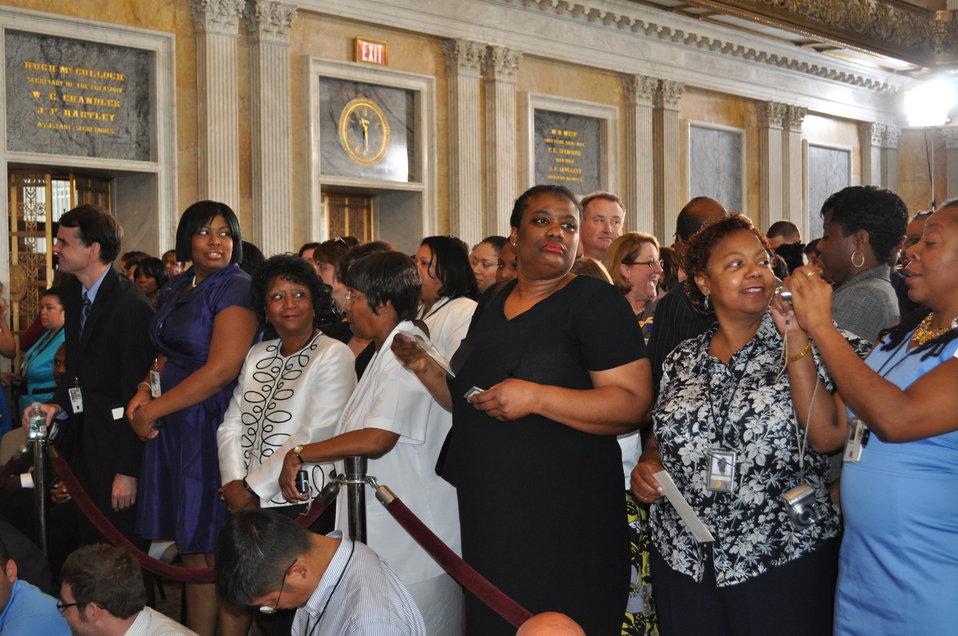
Michelle Obama visits the Treasury Department, 7/7/10

Treasury employees gathered in the Treasury Department’s Cash Room to hear remarks by Secretary Geithner and First Lady Michelle Obama.